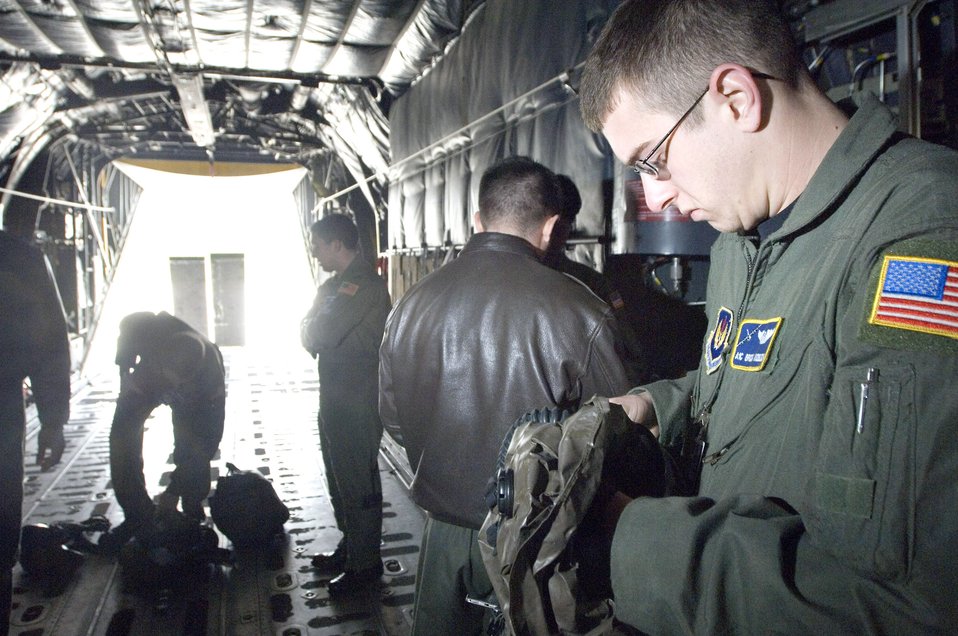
Egress training

Airman 1st Class Broch Knobloch prepares to don his emergency respiratory protection system at egress training on a C-130 Hercules at Ramstein Air Base, Germany, on Thursday, June 1, 2006. Airman Knobloch is a loadmaster with the 37th Airlift Squadron at Ramstein.